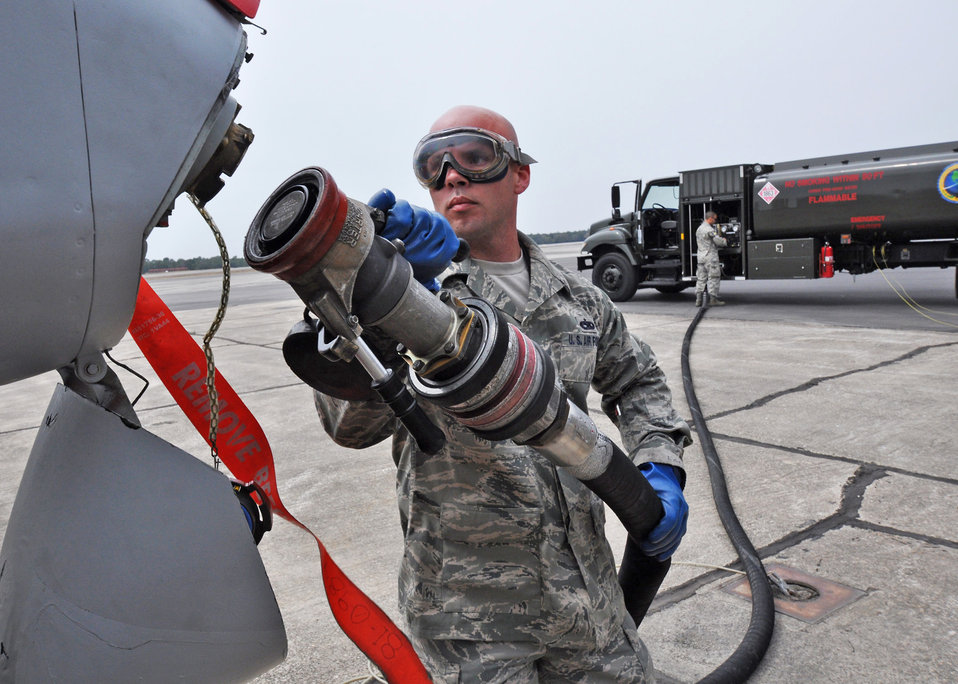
Biofuel flight

Staff Sgt. Rusty Jones prepares to fuel an A-10C Thunderbolt II March 25, 2010, with a 50/50 blend of Hydrotreated Renewable Jet and JP-8. The A-10 then flew what was the first flight of an aircraft powered solely by a biomass-derived jet fuel blend.